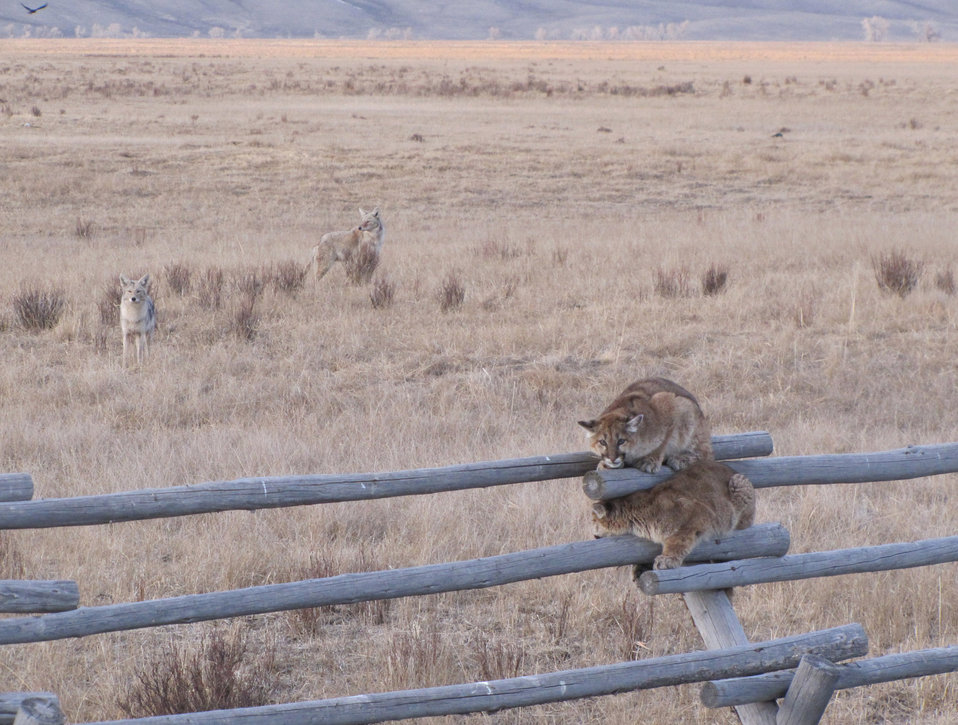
Uh Oh ...

One in a series of seven photos:

The National Elk Refuge's Outdoor Recreation Planner witnessed a spectacular standoff between two juvenile mountain lions and five coyotes. The coyotes let the cats know they weren’t welcome in the area. The mountain lions sought safety on a buck and rail fence for over an hour while the coyotes lurked in the background.

Now, two of the five coyotes can be seen in the background as one of the mountain lions looks anxiously behind.

Credit: Lori Iverson / USFWS

This photo series has gone viral! Join the discussion on our Facebook page: www.facebook.com/photo.php?fbid=595246397154972&set=a...